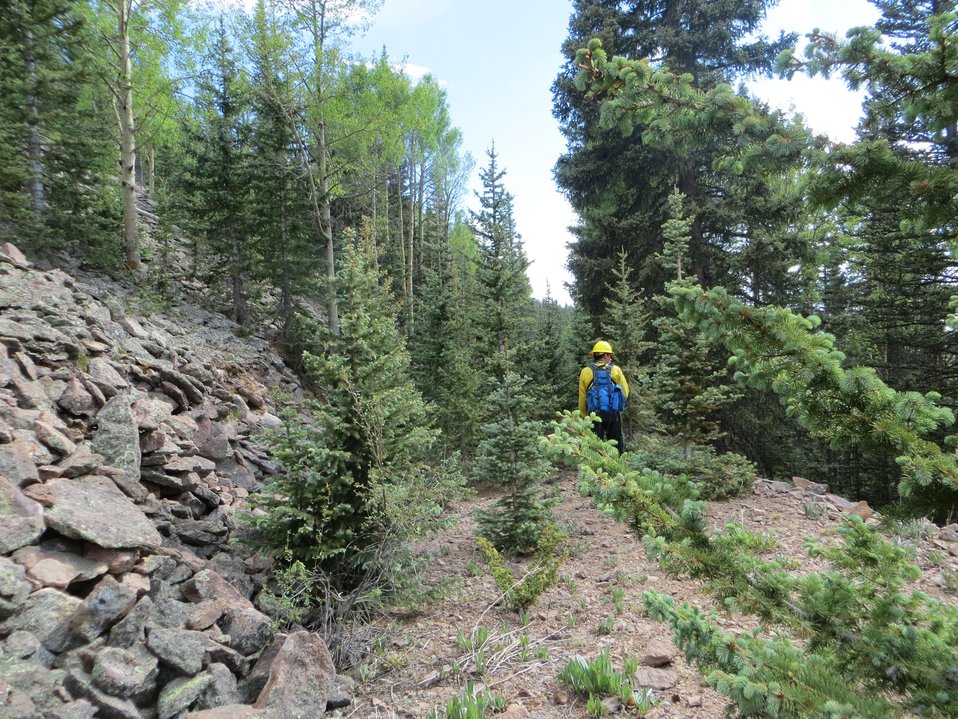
Burned Area Emergency Response (BAER) assessment teams examine the burned out areas at the Thompson Ridge Fire in the Sante Fe National Forest approximately 10 miles north of Jemez, NM. The fire began on May 31, 2013 by human ignition has consumed over 29, 903 acres. BAER teams are comprised of specialists that are highly experienced in conducting rapid watershed assessments and analyses and may include soil scientists, hydrologists, geologists, biologists, geographic information system specialists, archeologists, botanists, silviculturists, and civil engineers. (Silvaculturists are individuals that specialize in the care and cultivation of forest trees).